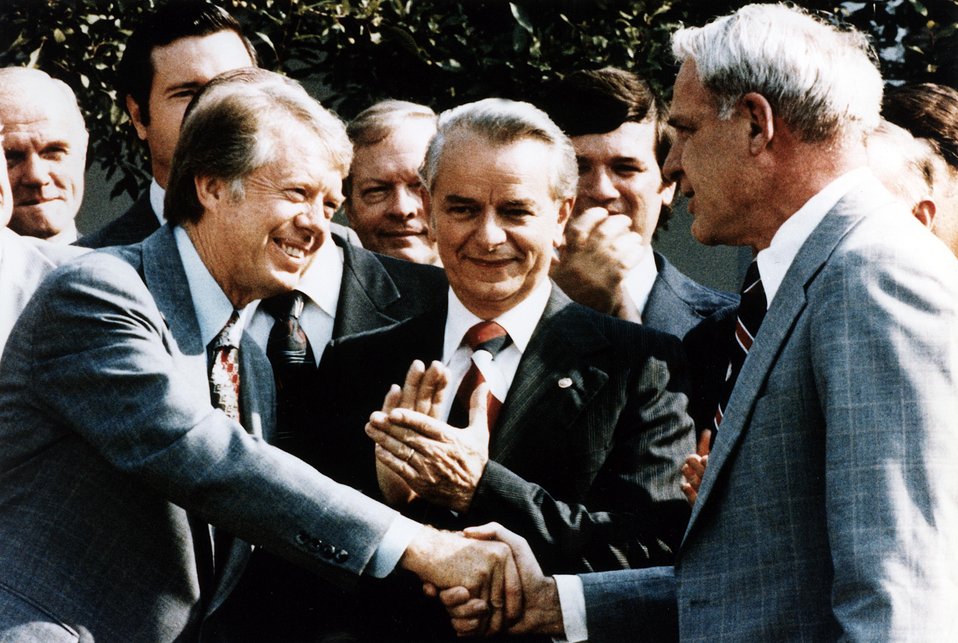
President James Earl Carter.